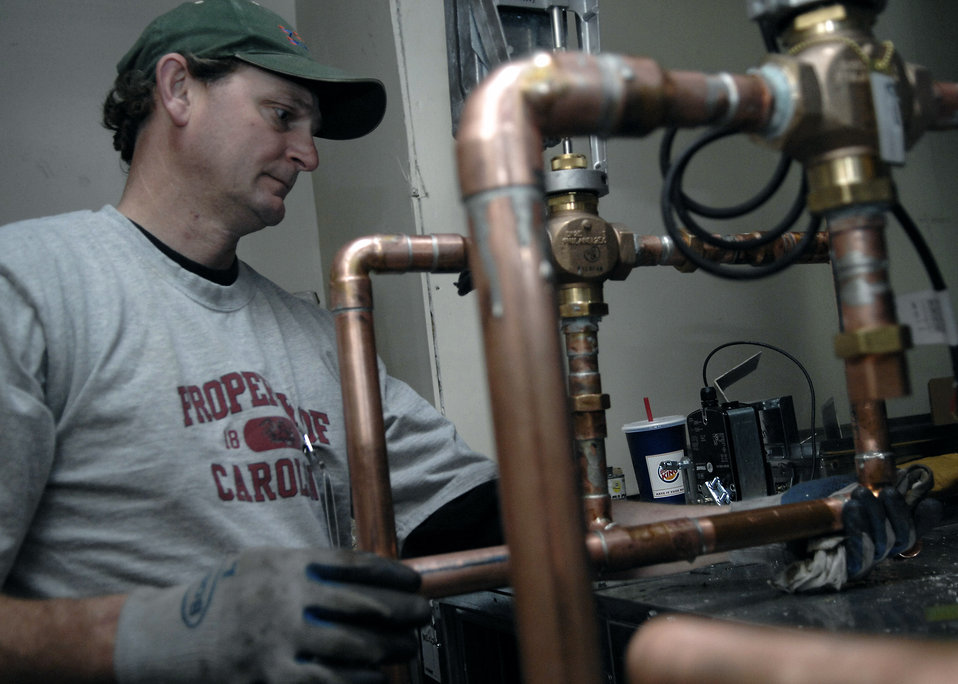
Energy conservation at Charleston AFB, S.C.

Johnny Radcliffe wipes down the copper pipes Feb. 18 to cool and set the soldering for a heating, ventilation and air conditioning system being installed at Charleston Air Force Base, S.C. Currently, there are four HVAC installation projects taking place at facilities where outdated, inefficient heating and cooling equipment is being replaced with new, energy-efficient equipment and controls to help the base conserve energy. Mr. Radcliffe is a foreman for a local plumbing contractor.